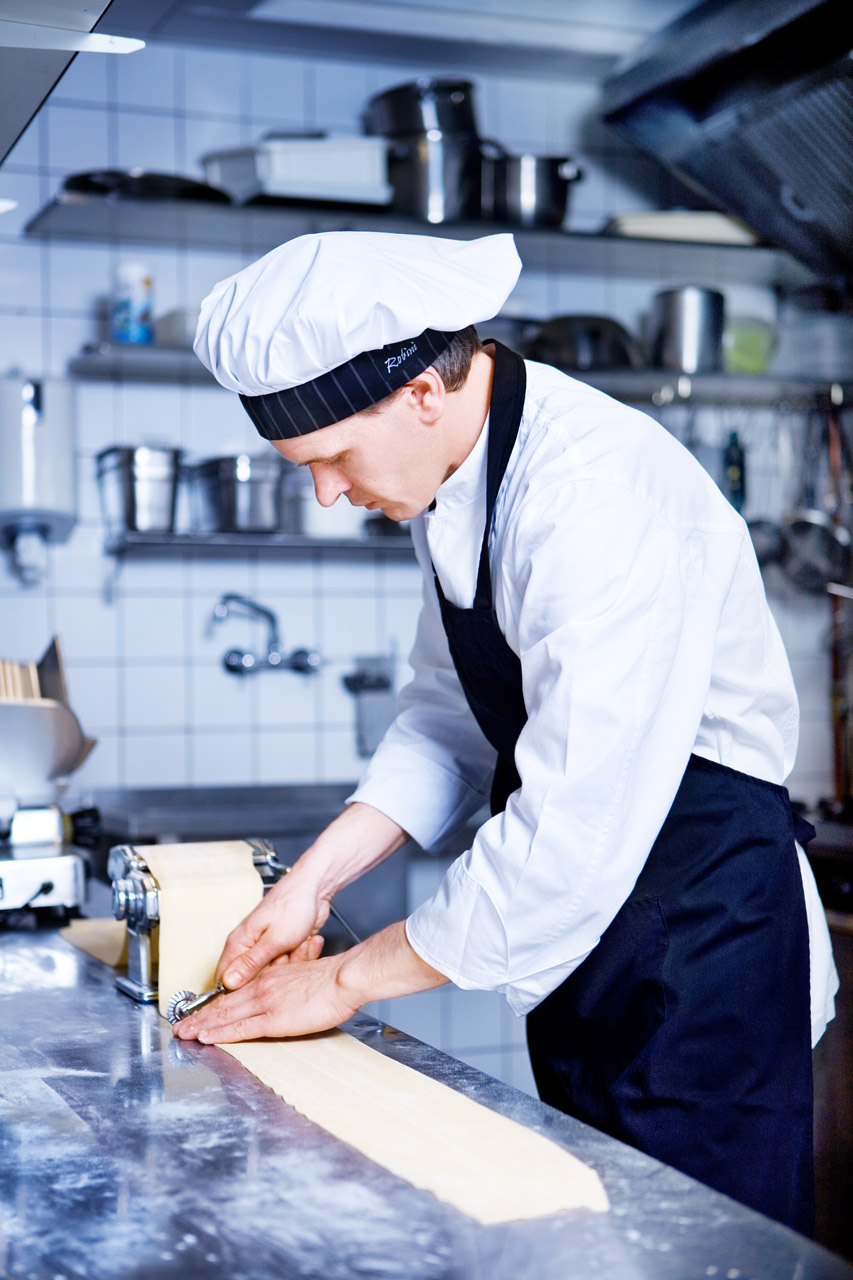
Restaurant alexander the hague

Alexander the hague.